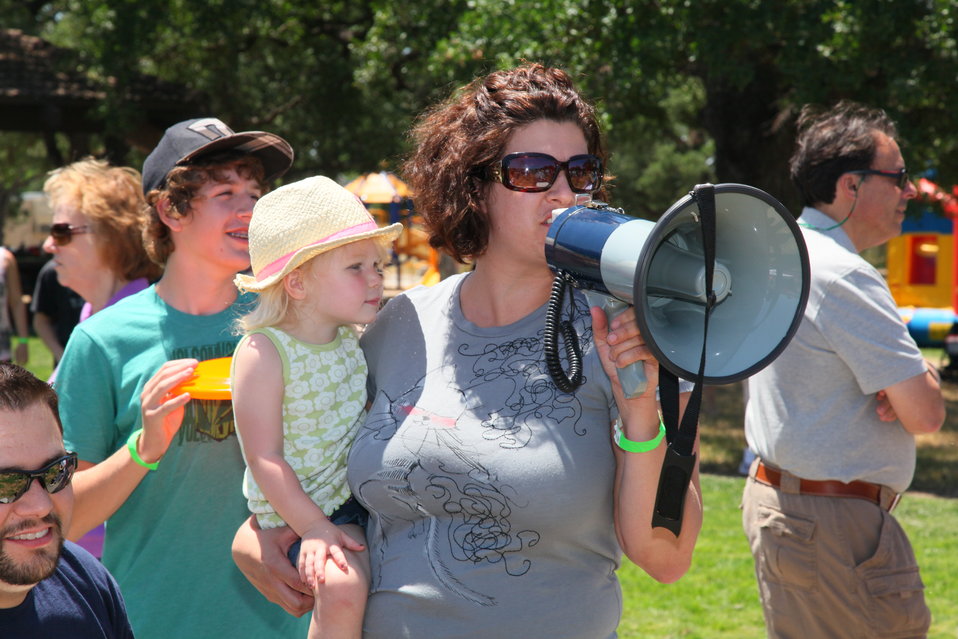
2011 Annual Picnic